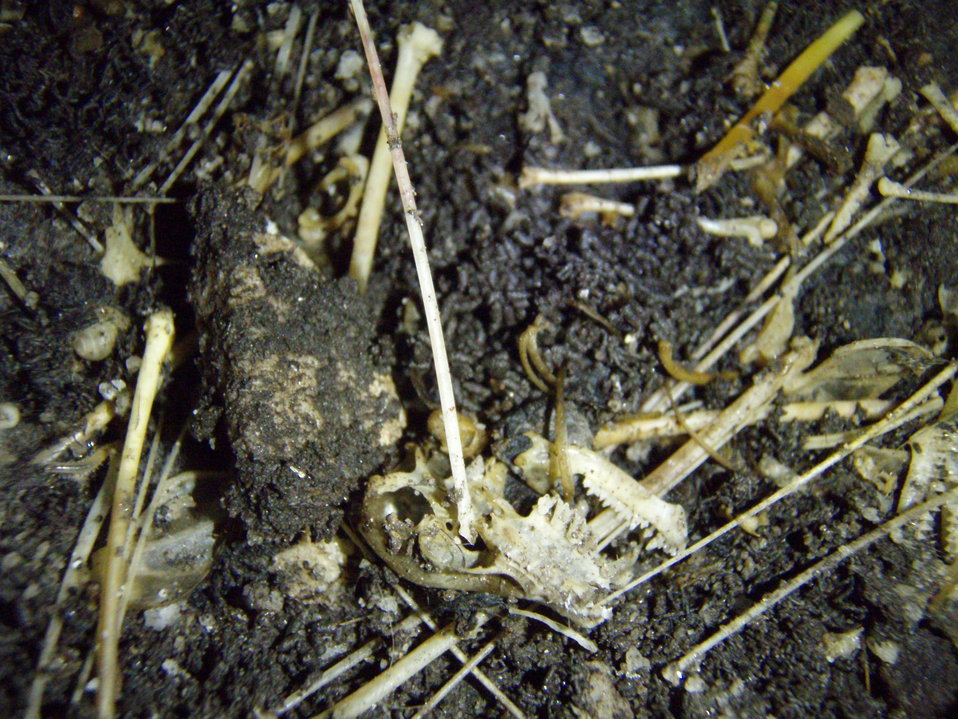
Bat bones litter the floor of Aeolus Cave, a WNS site in Vermont.